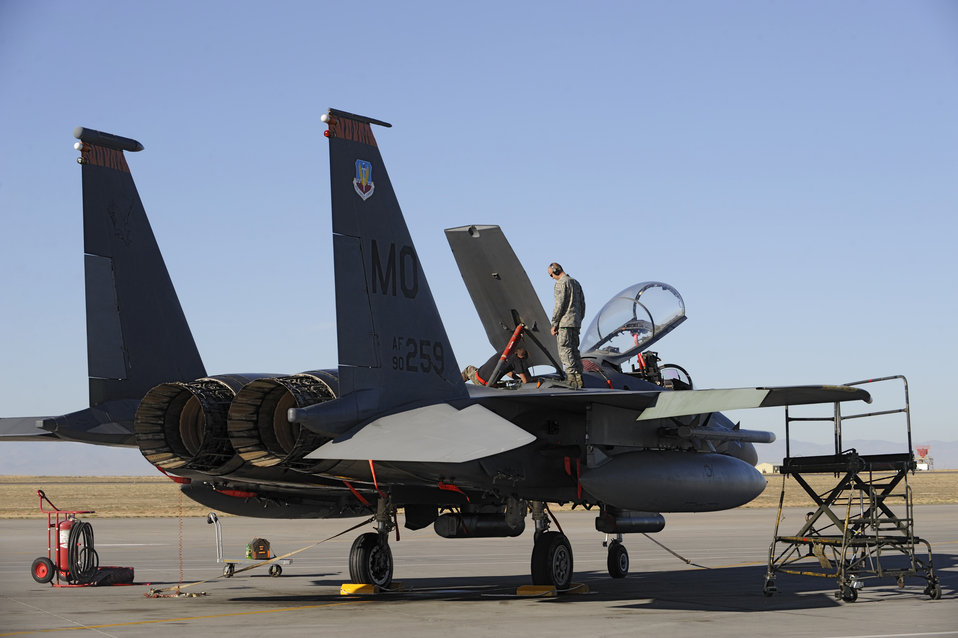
Gunfighter Flag wraps up

Staff Sgt. Robert Perry and Senior Airman Robert Eland, avionics specialists with the 366th Aircraft Maintenance Unit at Mountain Home Air Force Base, Idaho, perform maintenance on an F-15E Strike Eagle from the Mountain Home AFB's 391st Fighter Squadron Sept. 22, 2009, during Gunfighter Flag, which ran from Sept. 14 through 24. This was Mountain Home?s first large-scale, multi-national exercise which brought more than 450 personnel from the U.S. Air Force, U.S. Navy and Canadian air force to the base.